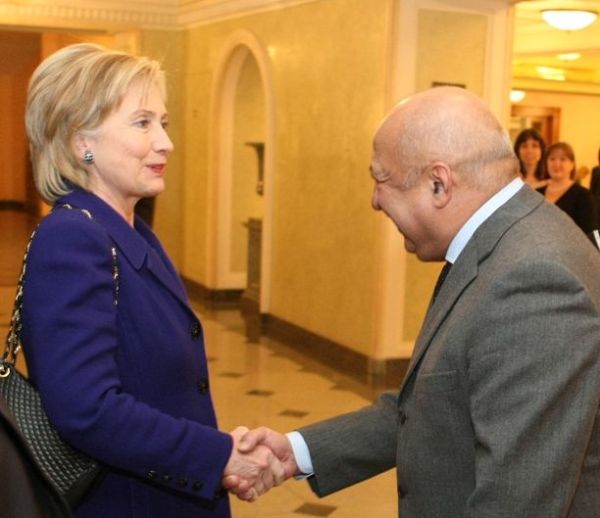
Secretary Clinton Greets Anatoliy Iksanov Bolshoi

U.S. Secretary of State Hillary Rodham Clinton greets Anatoliy Iksanov Bolshoi, Theater General Director, at the New Bolshoi Theater in Moscow, Russia, October 13, 2010.